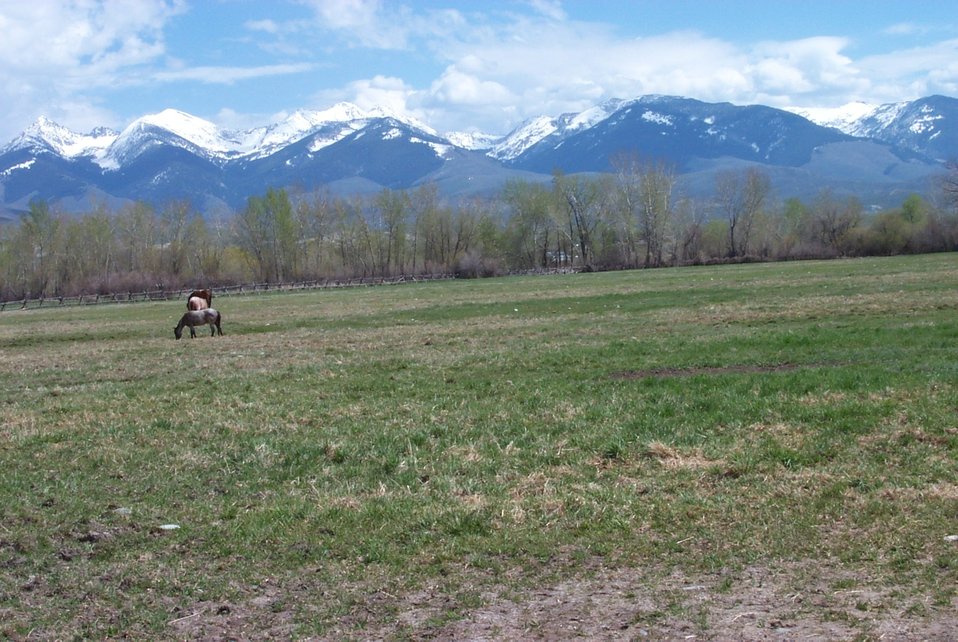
Realty Public access Exchange Salmon Field Office UCSC Upper Columbia Salmon Clearwater District